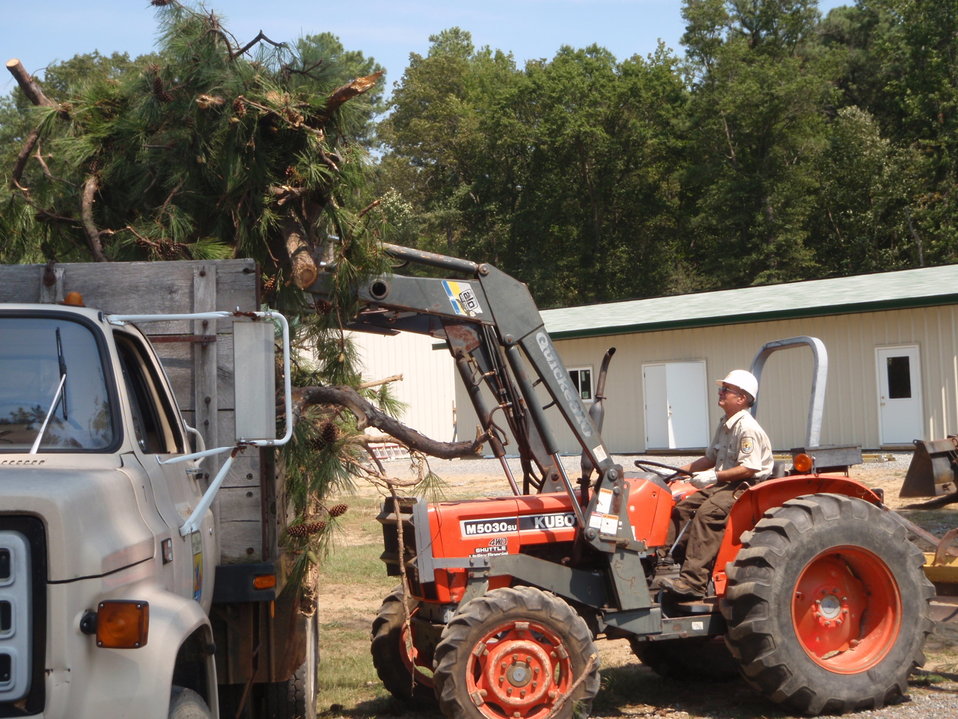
Harrison Lake Hurricane Irene preparedness.

Tree debris is removed in preparation of Hurricane Irene at Harrison Lake National Fish Hatchery in Virginia.